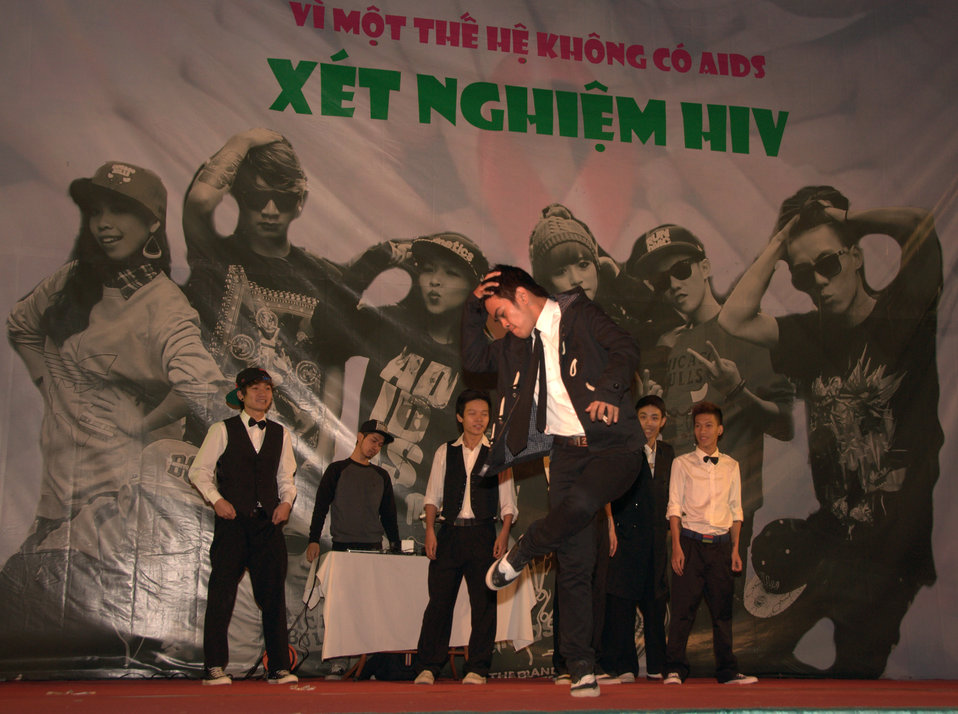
USAID and PEPFAR supports an outdoor concert to promote Vietnam's national action month for HIV

Hanoi, December 18, 2012.